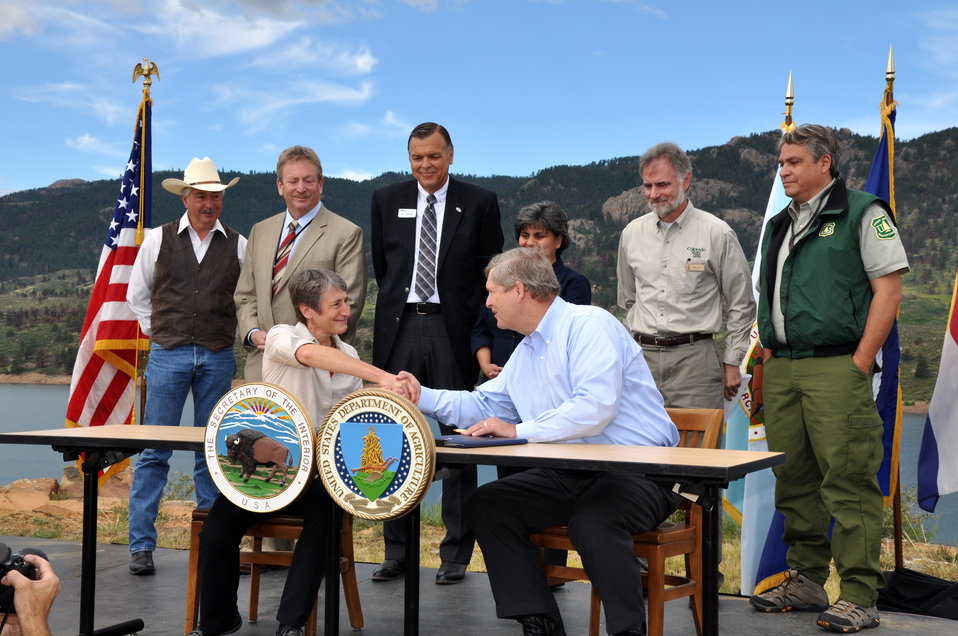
Agriculture Secretary Tom Vilsack and Interior Secretary Sally Jewell sign a Memorandum of Understanding (MOU) at the Horsetooth Reservoir in Fort Collins, CO on Jul. 19, 2013. This MOU will facilitate activities such as wildfire risk reduction through forest thinning, prescribed fire and other forest health treatments; minimizing post-wildfire erosion and sedimentation; and restoring areas that are currently recovering from past wildfires through tree planting and other habitat improvements.